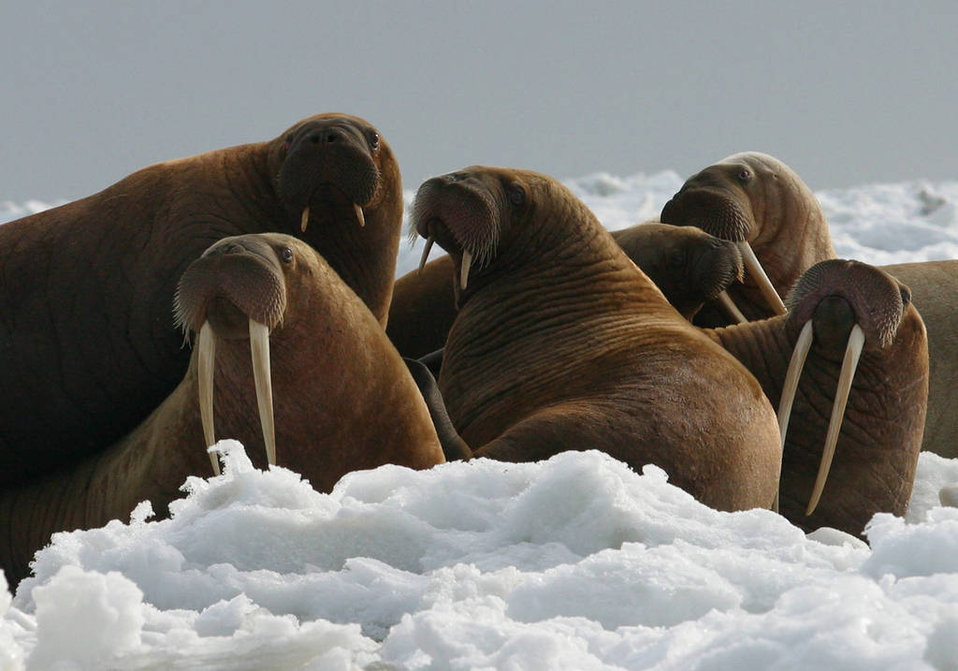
Walrus Cows and Yearlings on Ice

Photo credit: USFWS/Joel Garlich-Miller

As sea ice thins and retreats farther north, walrus, which rely on sea ice to rest on between foraging bouts, and polar bears, which need sea ice to hunt seals, will either be displaced from essential feeding areas or forced to expend additional energy swimming to land-based haul-outs